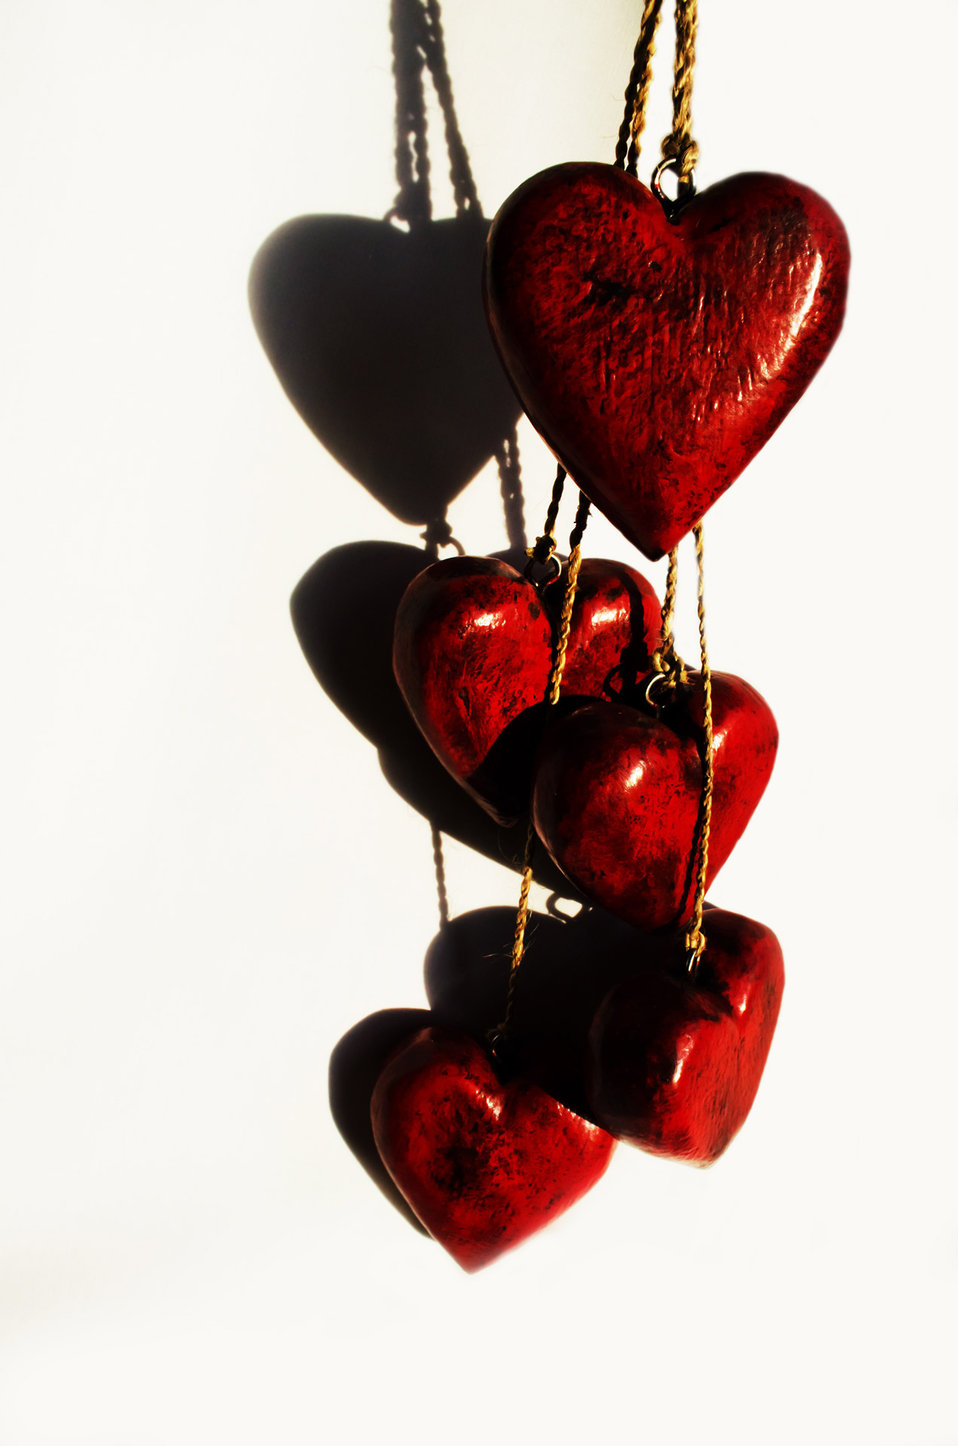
Hearts on the white background.